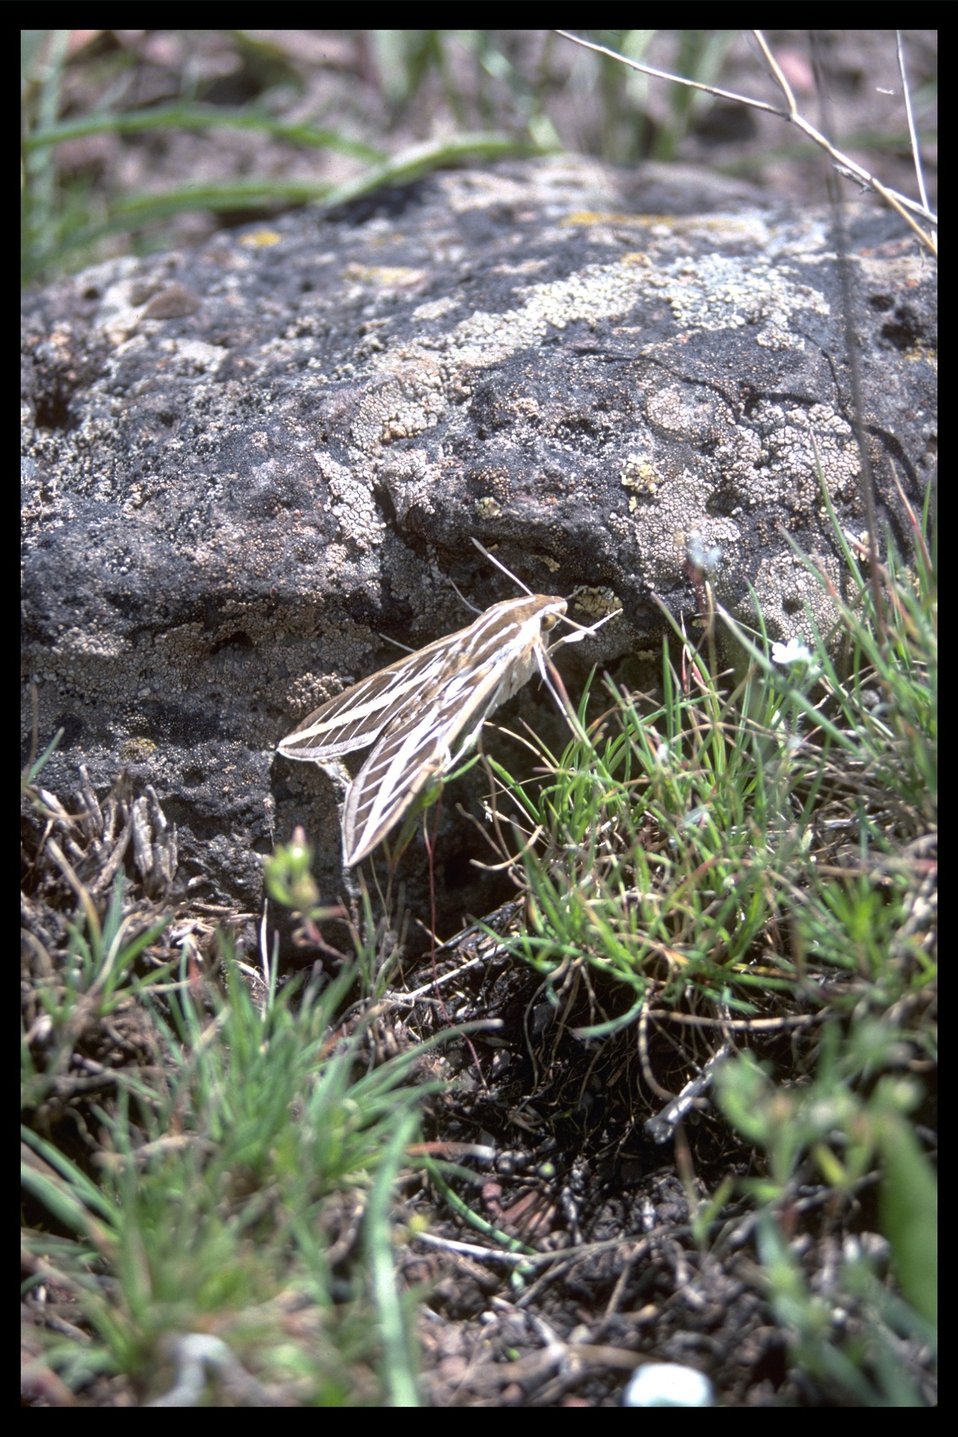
Sphinx Moth on Rock in high Steens WSA. (WSA 2-85F)